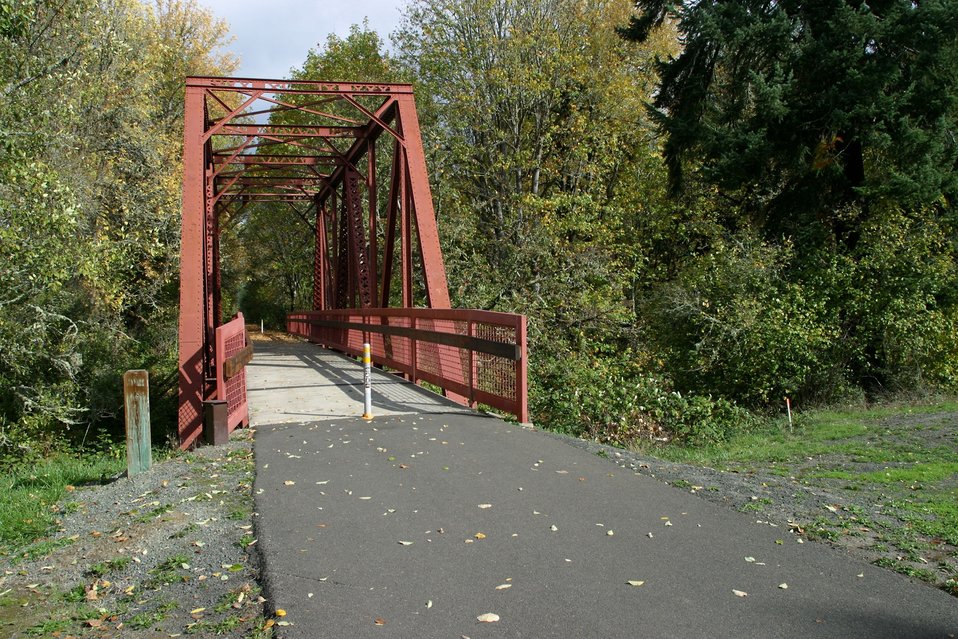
The the 15.6 mile Row River Trail trail not only attracts mountain bicyclists and horseback riders, but also road bicyclists and even a few in-line skaters.